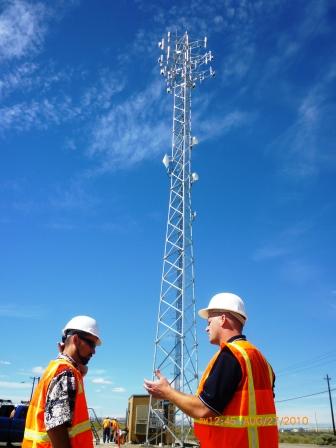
Workers Clean Up Land, Remove Waste in Hanford Site Recovery Act Projects